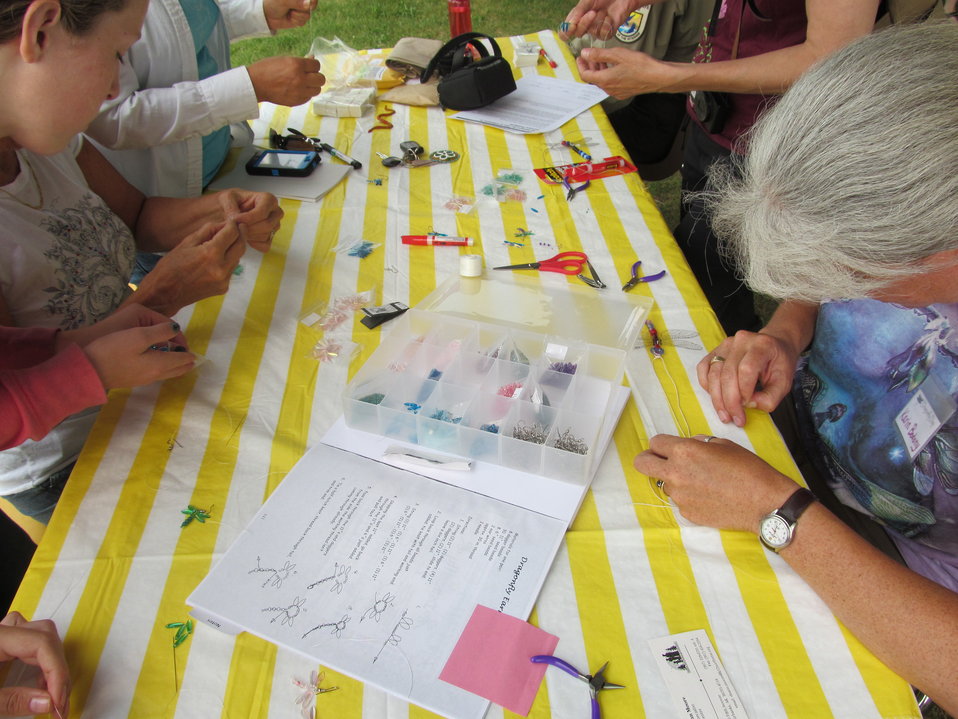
Beaded earring station

(USFWS)